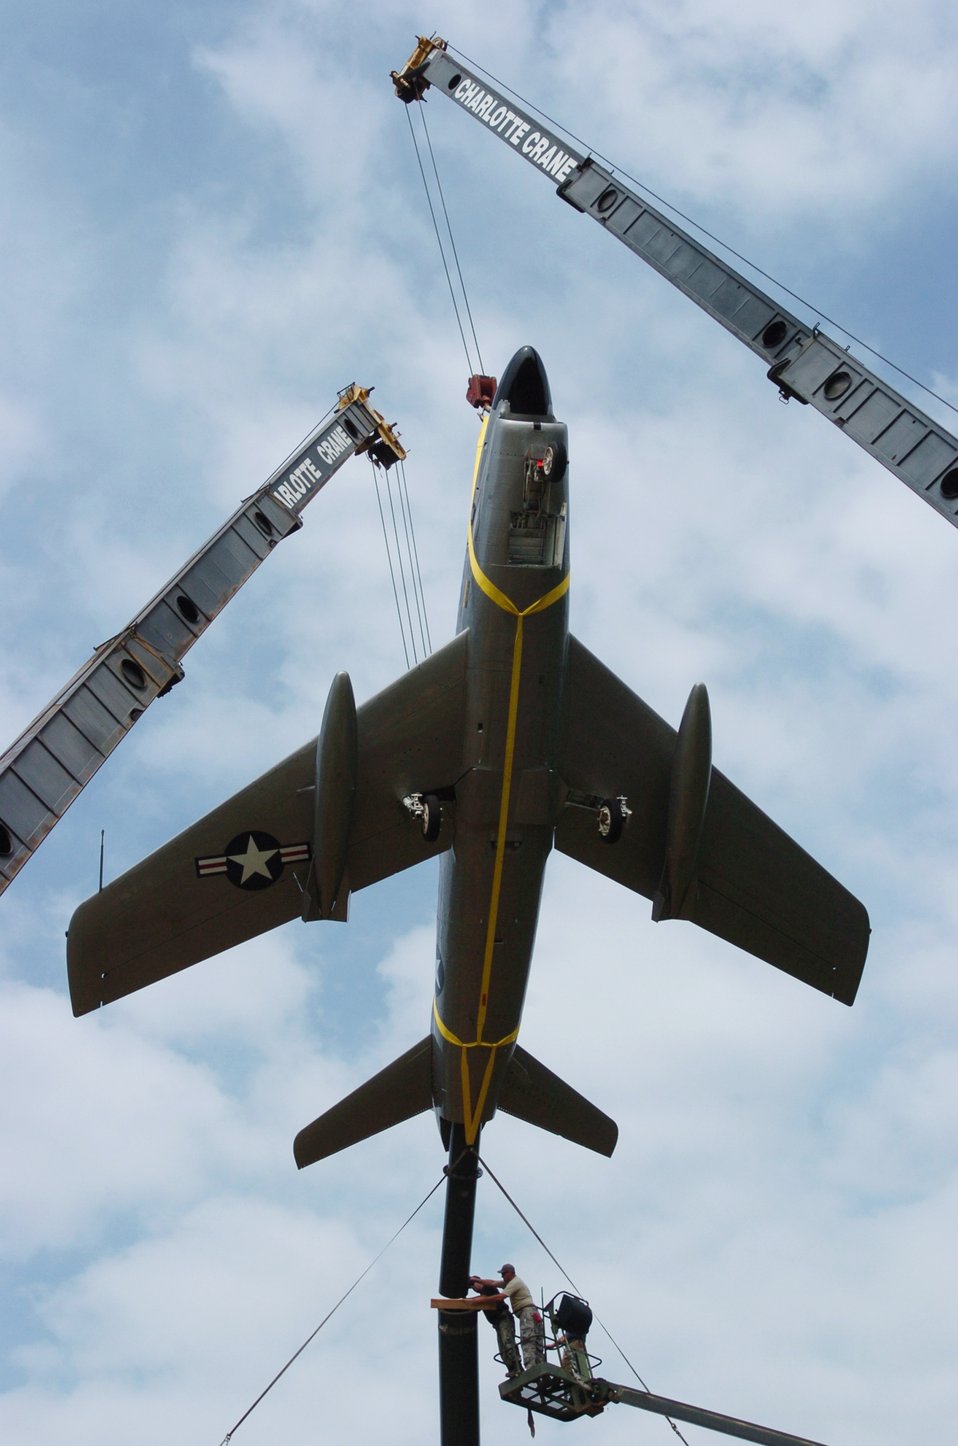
Sabre in the sky

Airmen from the North Carolina Air National Guard's 145th Civil Engineer Squadron assist placing an F-86 Sabre fighter jet on a mount in Charlotte, N.C. A squadron of F-86s was assigned to the Air National Guard during the 1960s, and the vintage jet will be part of the guard's new main gate.